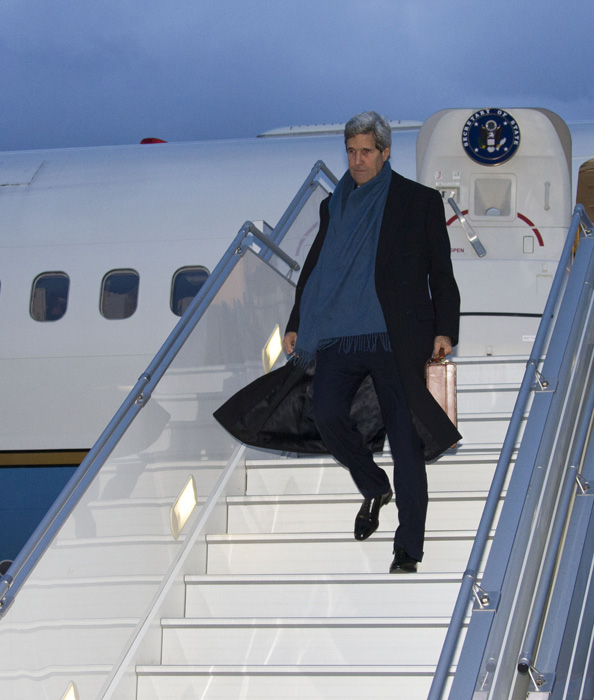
Secretary Kerry Travels to Geneva

U.S. Secretary of State John Kerry arrives in Geneva, Switzerland, November 23, 2013.